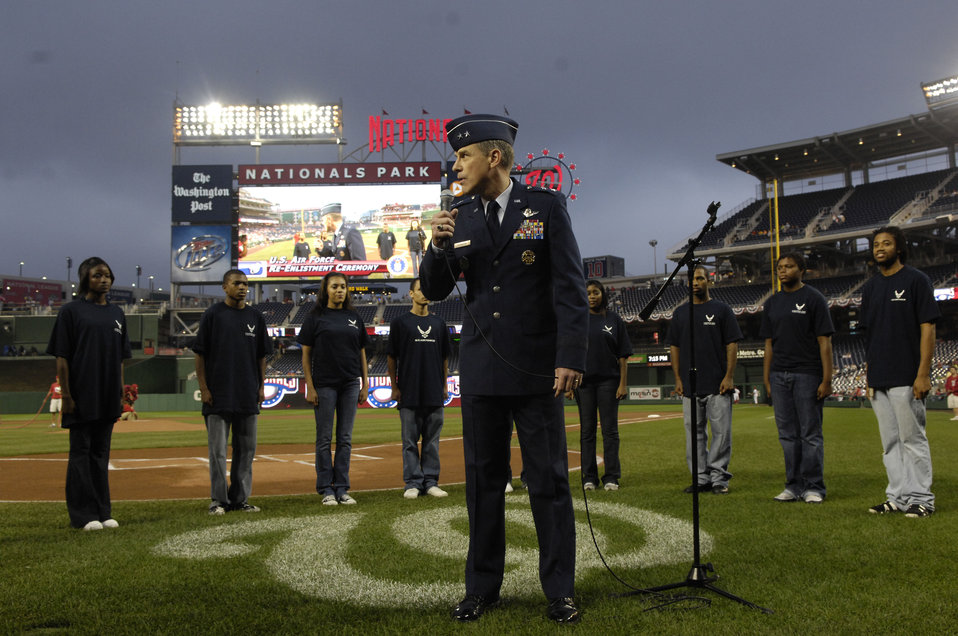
Air Force participates in major league game

Maj. Gen. William Chambers, director of communication for the office of the secretary of the Air Force, introduces 10 Air Force recruits during the Washington Nationals Air Force Appreciation Night held Aug. 29 at Nationals Park in Washington, D.C. This was the first time the Washington Nationals Major League Baseball team held an event honoring the Air Force at the new park.